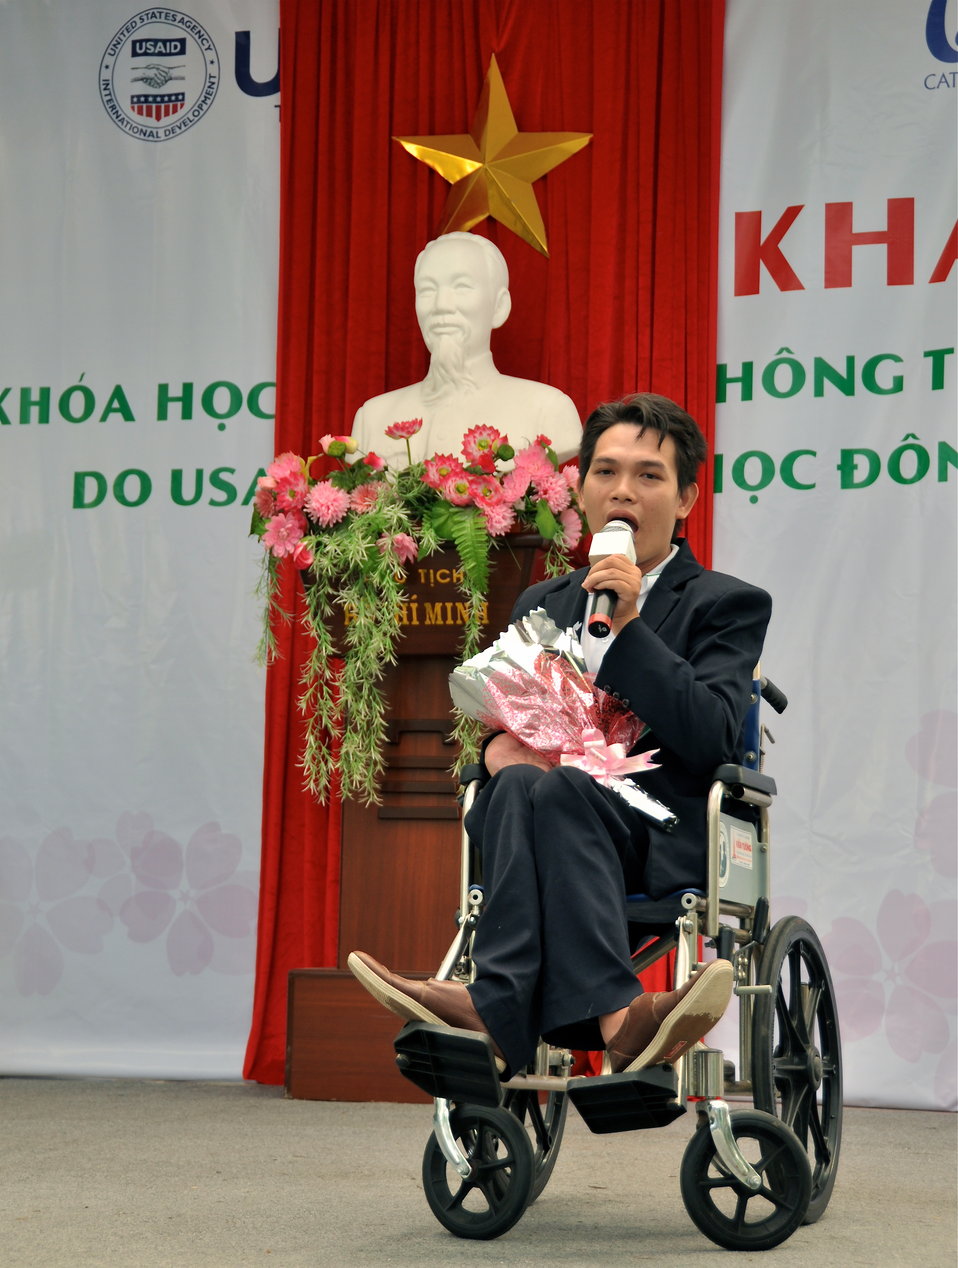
New class of students starts at Dong A Univeristiy with support from USAID and CRS

Photo: @USAIDVietnam
December 3, 2012